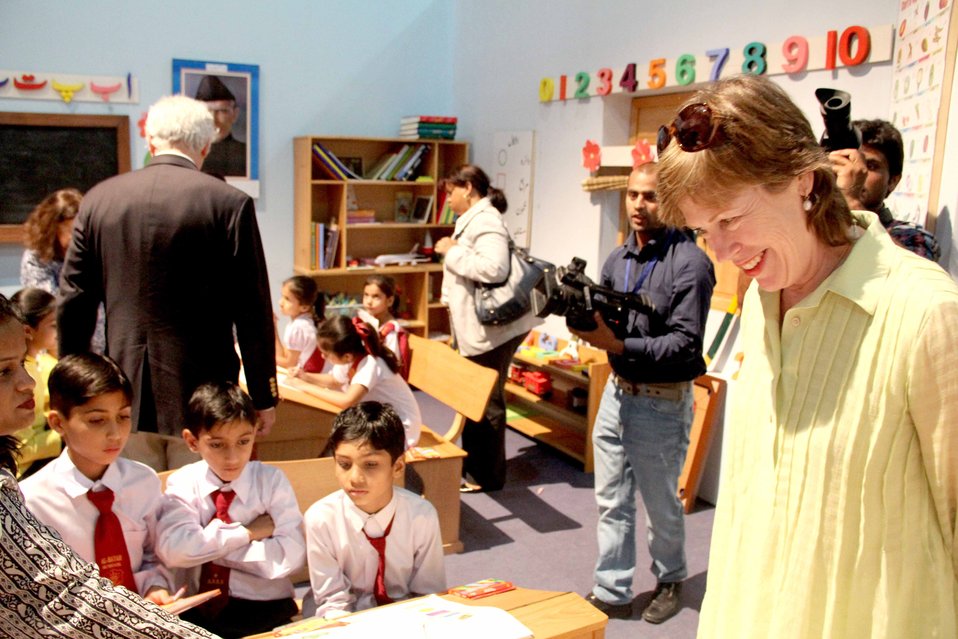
U.S. Ambassador’s Visit to Sim Sim Hamara Highlights U.S. Commitment to Improved Children’s Education in Pakistan at Lahore on 28 April, 2012

Dr. Marliyn Wyatt talk with the childrens